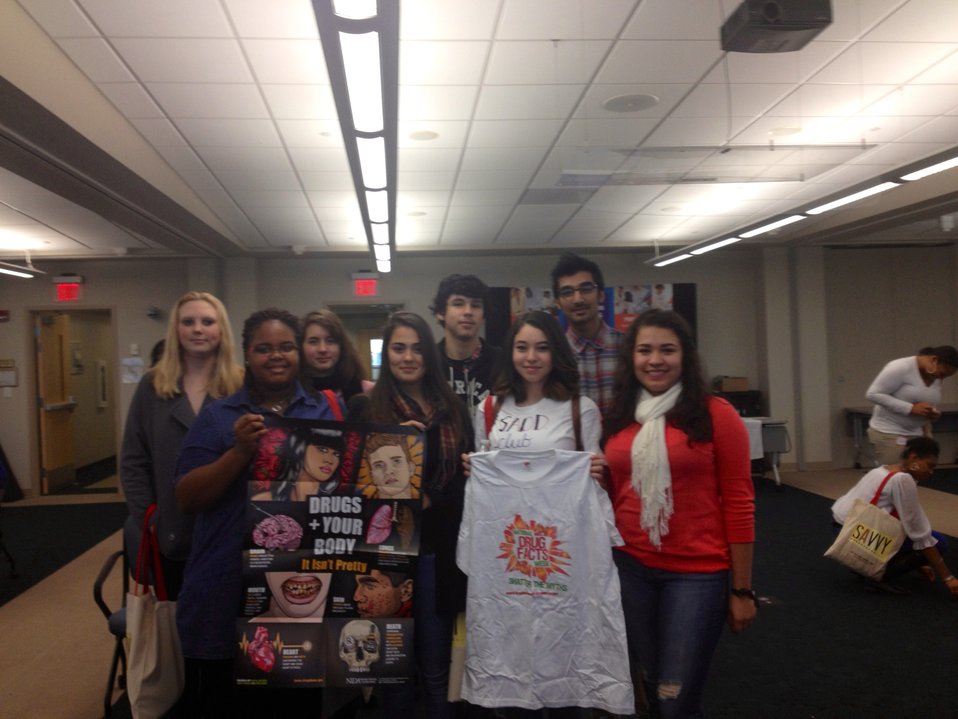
GarField High School SADD club